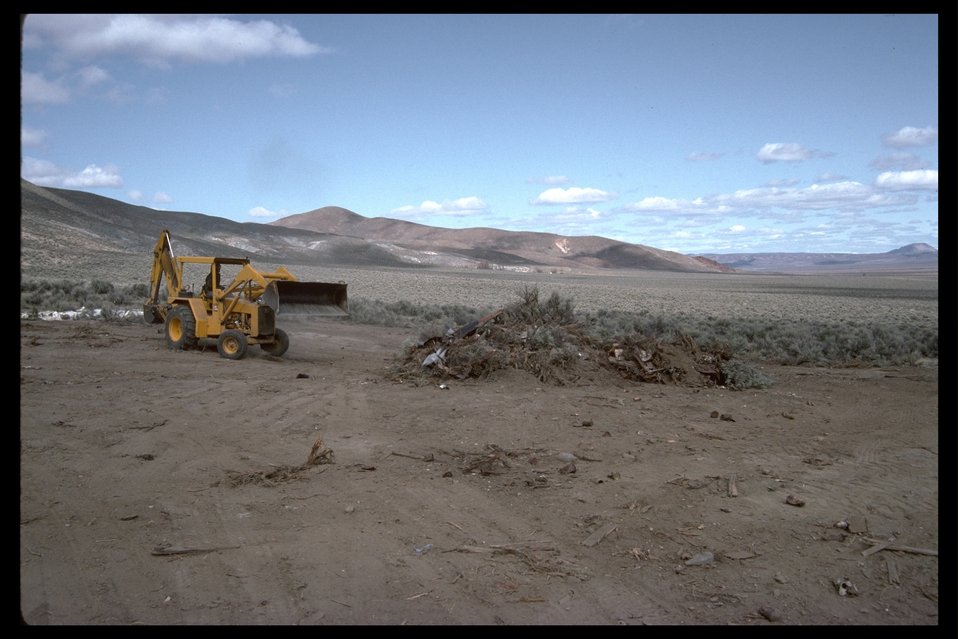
Pueblo Mountain WSA, illegal dumpsite cleanup with over 100 dump truck loads removed. (WSA 2-81)